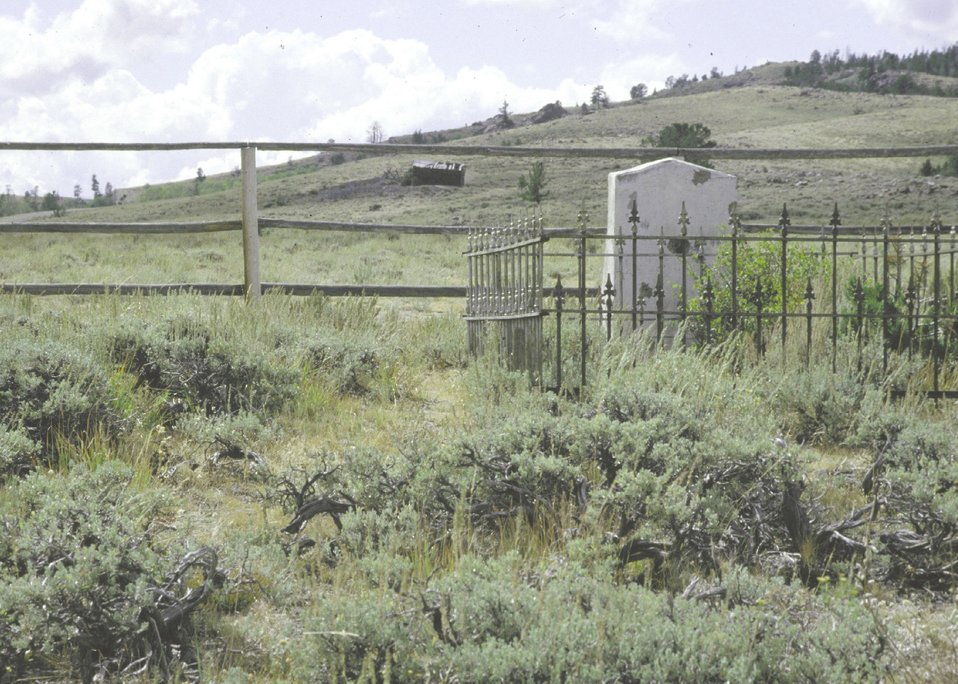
An old graveyard located at Miner's Delight, South Pass, Wyoming.